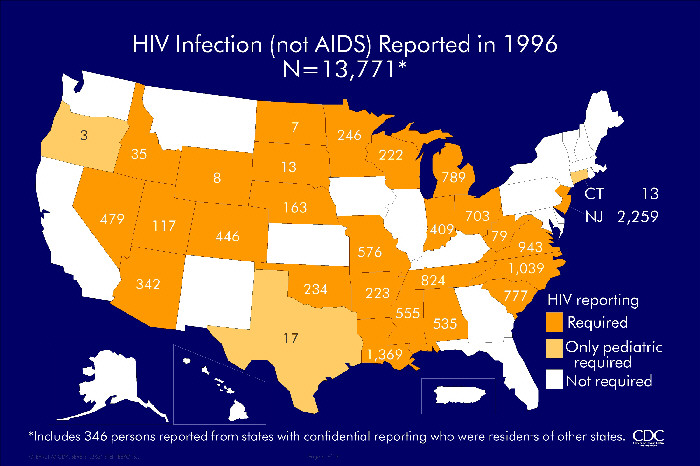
HIV Infection (not AIDS) Reported in 1996